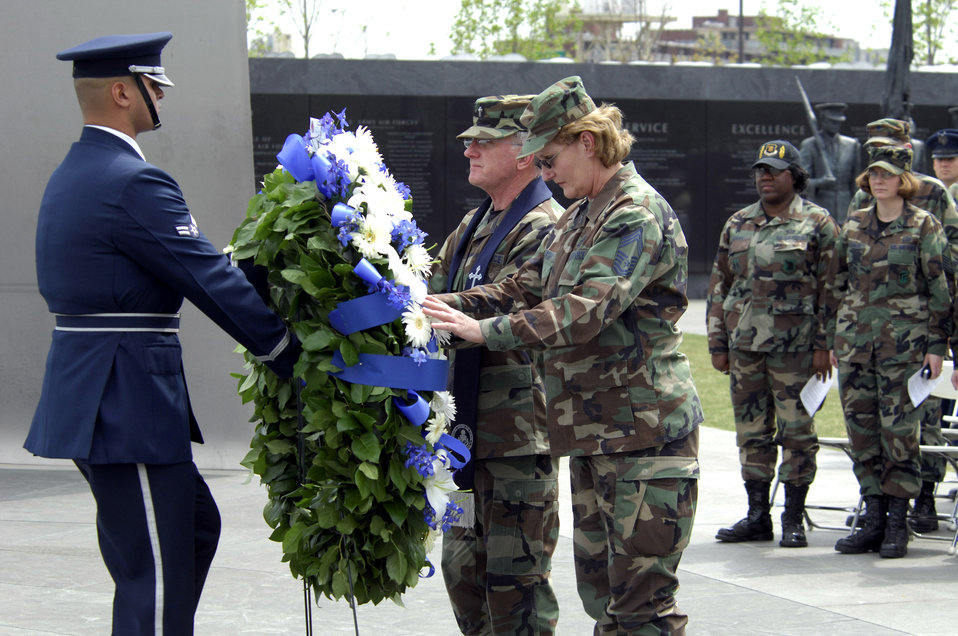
Air Force chaplains join together for memorial service

Chaplain (Maj. Gen.) Charles Baldwin and Chief Master Sergeant Kaye Carter place a ceremonial wreath in position at the base of the Air Force Memorial April 25 with the help of Airman 1st Class Kirk Campbell of the Air Force Honor Guard. General Baldwin is chief of Air Force chaplains and Chief Carter is the chaplain's assistant career field manager.